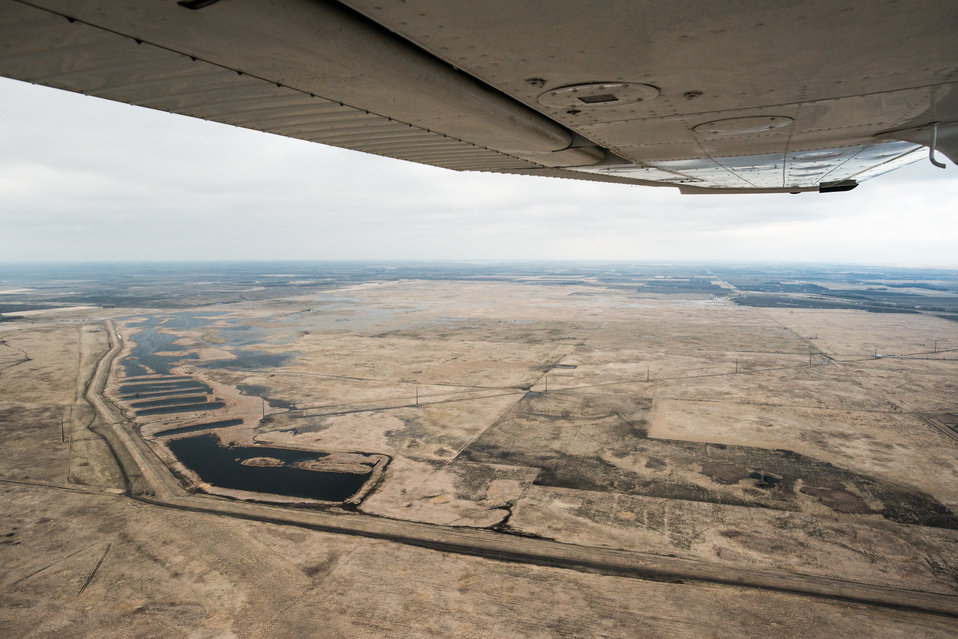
English Coulee Watershed Dam, a Public Law PL83-566 Small Watershed Program, in Grand Forks County, ND, on Tuesday, April 30, 2013. To learn about the Red River Basin Initiative, see www.mn.nrcs.usda.gov/news/features13/RRBI.html.